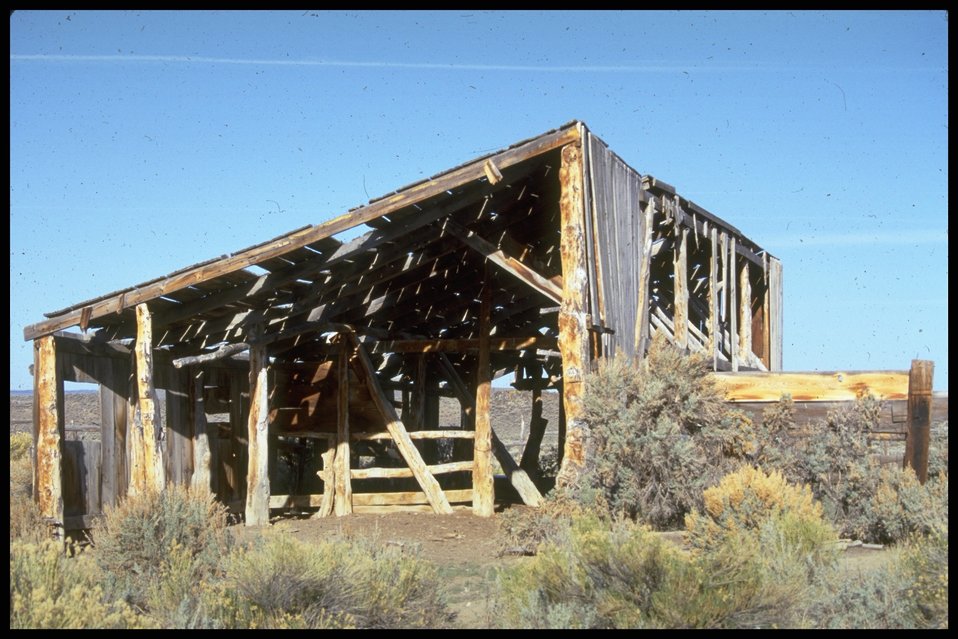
Abandoned shed at Shirk Ranch, Lakeview District.